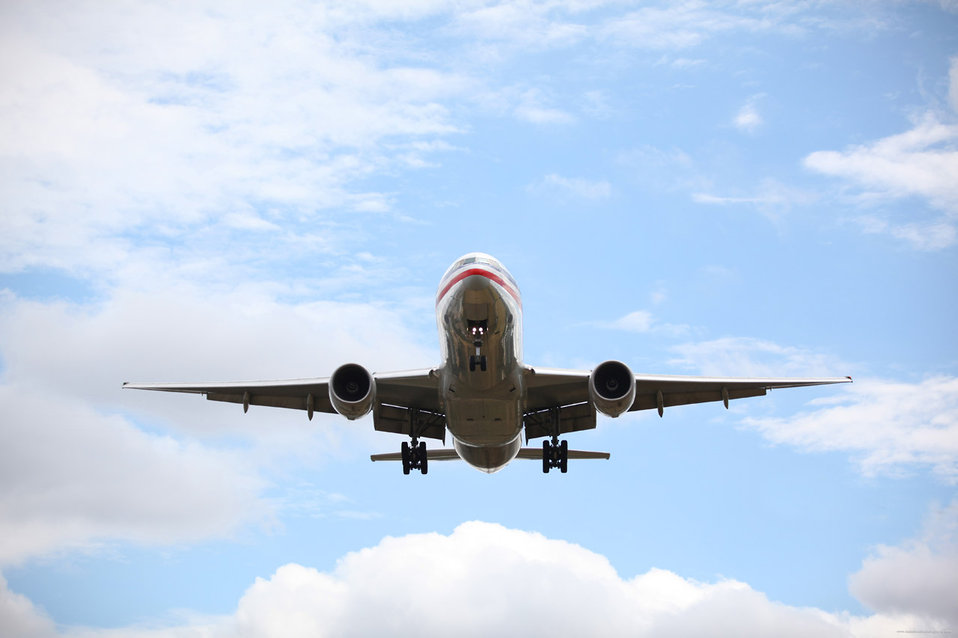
Airplane landing at airport front shot..